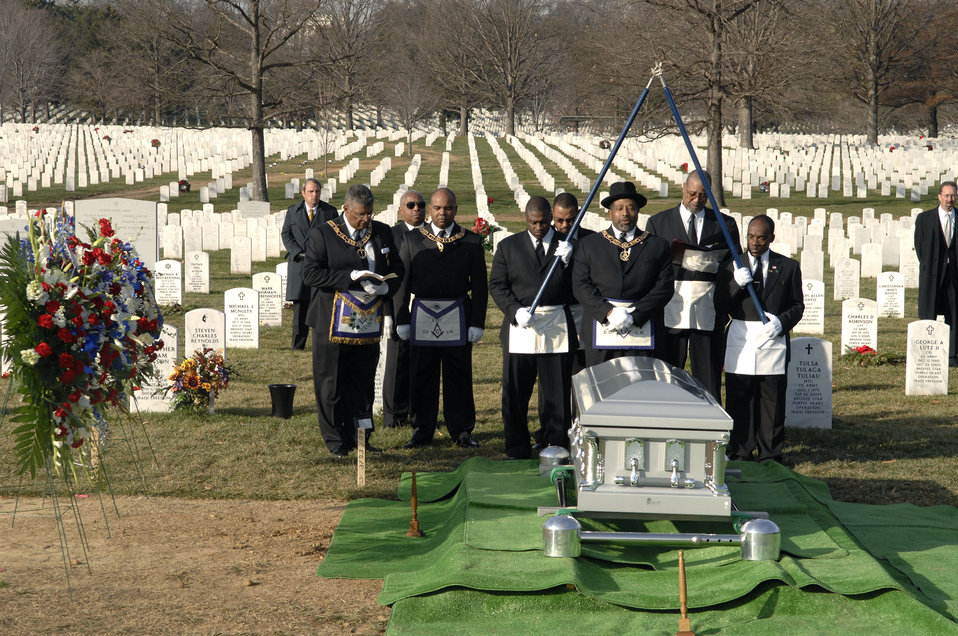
One final salute

District Deputy Grand Master of the 31st Masonic District Clifton Johnson Sr. leads his lodge brothers in prayer beside the casket of Capt. Kermit Evans during the Masonic burial portion of his funeral Dec. 12 at Arlington National Cemetery. Captain Evans had been a Mason for more than a year. More than 200 friends and relatives gathered to pay their respects to Captain Evans, a member of the 27th Civil Engineering Squadron Explosives Ordnance Disposal Flight at Cannon Air Force Base, N.M. He was deployed to Iraq when the helicopter he was a passenger in made an emergency landing and crashed. He was one of the four out of 16 who were killed as a result of the crash. He is survived by his wife, Perneatha, and Kermit Jr., their 13-month-old son.